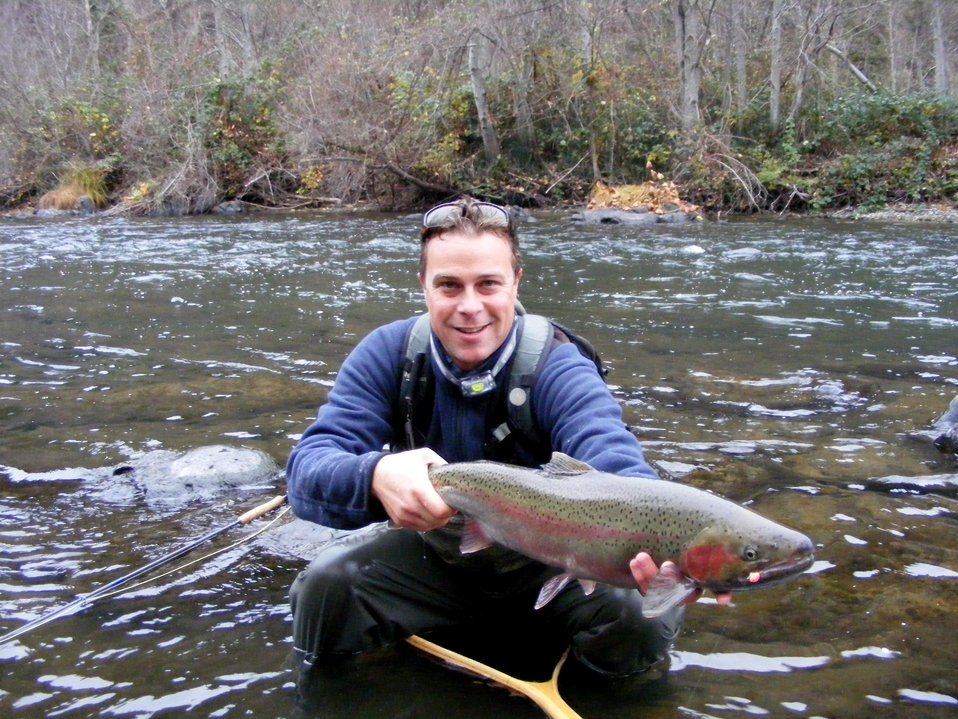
Marc Provencher served in the U.S. Navy from 1999 to 2003. He’s currently a Fish Biologist at Coleman National Fish Hatchery near Anderson, Calif., which produces millions of Chinook salmon and steel head trout each year.